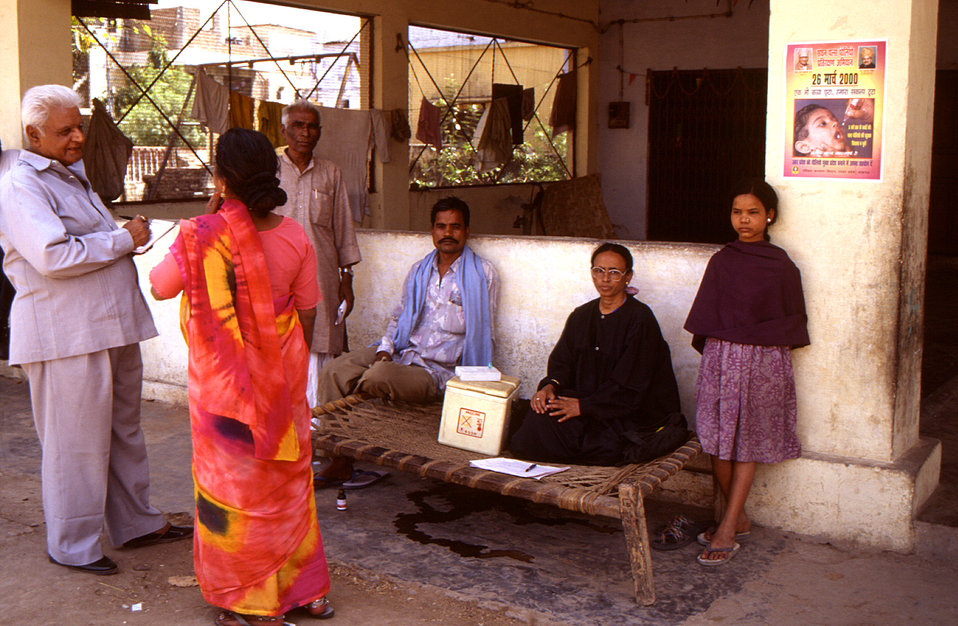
This 2000 photograph depicted a number of health care providers who had set up an interviewing area, and were in the process of interviewing parents outside a polio immunization site. At the time this image was captured, the team translator, Dr. G.P. Pandey (at left), was conducting an interview, while a Muslim health care worker wearing a burqa, was sitting on a cot, next to a cooler which contained the polio vaccine. This image was provided by Chris Zahniser, B.S.N., R.N., M.P.H., a STOP Transmission of Polio (STOP) immunization initiative team member and photographer. Ms. Zahniser was at the time assigned to the state of Uttar Pradesh in northern India, and spent three months working in the Districts of Gorakhpur and Deoria.